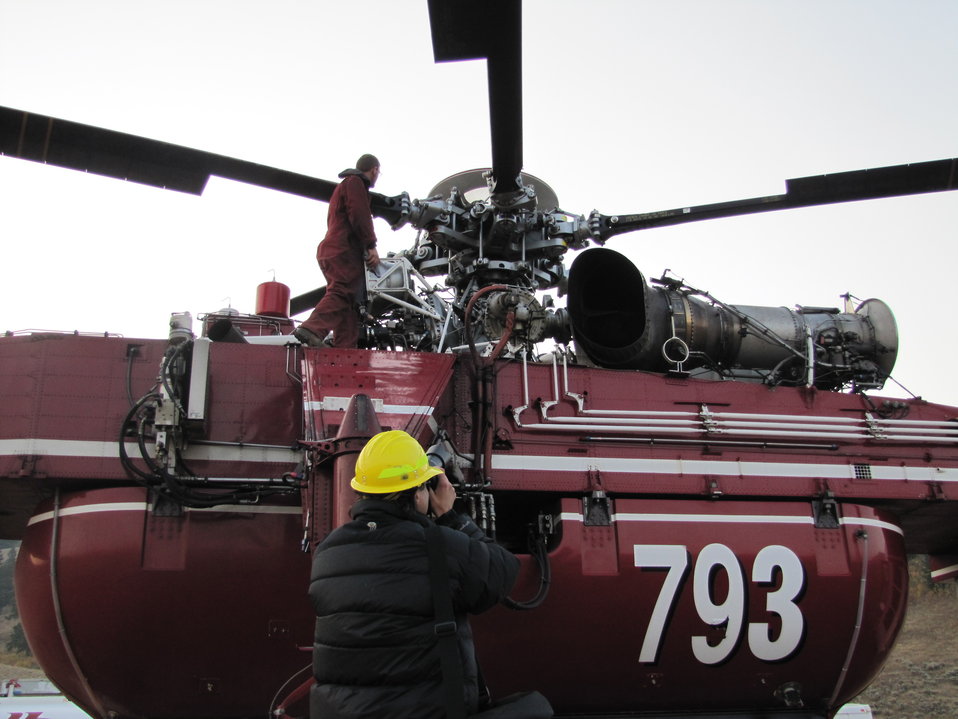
Photographer Takes Close-Ups

A newspaper photographer took advantage of an early morning guided media tour to take pictures of a Type I helicopter.